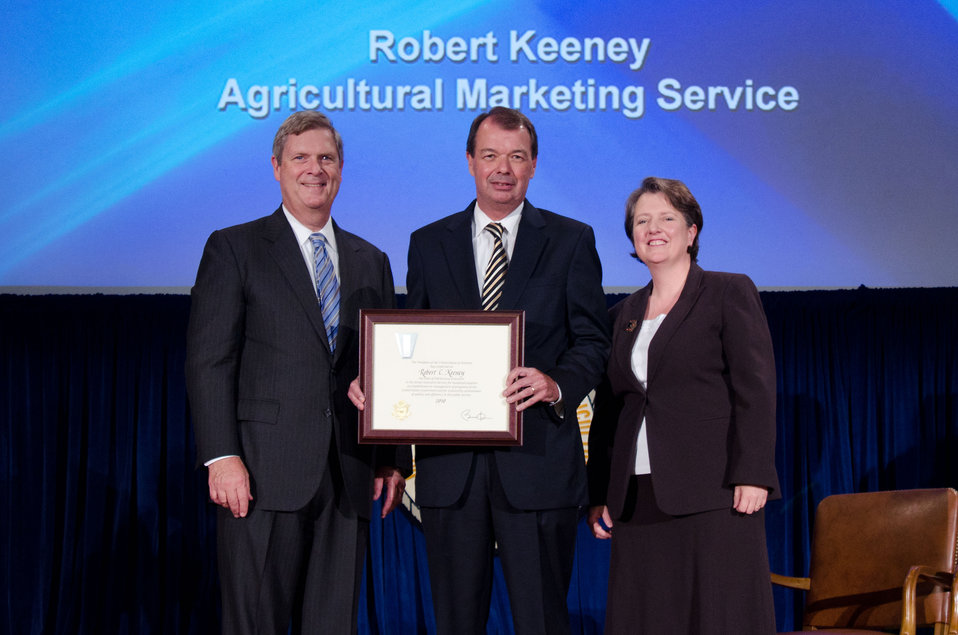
Agriculture Secretary Tom Vilsack (l) and Deputy Secretary Kathleen Merrigan (r), presents the Meritorious Executive Award to Robert Keeney, Deputy Administrator, Fruit and Vegetable Programs, Agricultural Marketing Service. The President of the United States of America has conferred on Robert Keeney the rank of Meritorious Executive in the Senior Executive Service for sustained extraordinary accomplishment in management of programs of the United States Government and for leadership exemplifying the highest standards of service to the public reflecting credit o the career civil service. On Wednesday, September 14, 2011 in the Jefferson Auditorium at the US Department of Agriculture in Washington, DC.